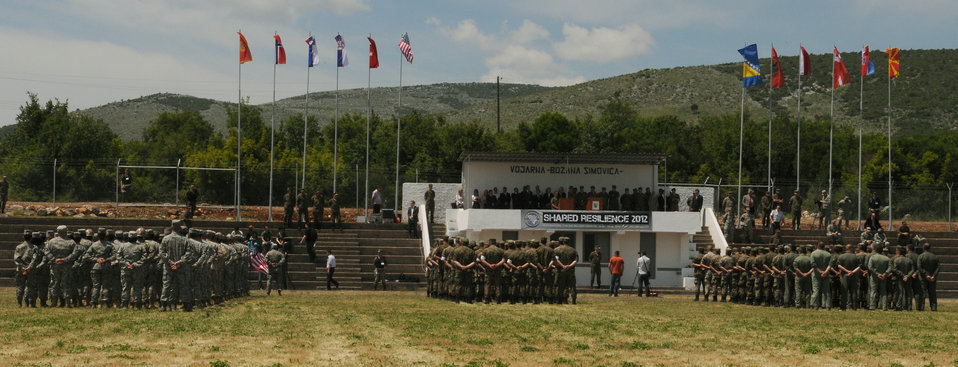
Multinational medical exercise readies forces

Participants of Shared Resilience 2012 stand in formation during the exercise’s opening ceremony at Capljina, Bosnia and Herzegovina, May 28, 2012. The goals of the exercise are to strengthen interoperability; facilitate training in crisis response and disaster management; and validate the readiness of deployable military medical and humanitarian assistance teams.